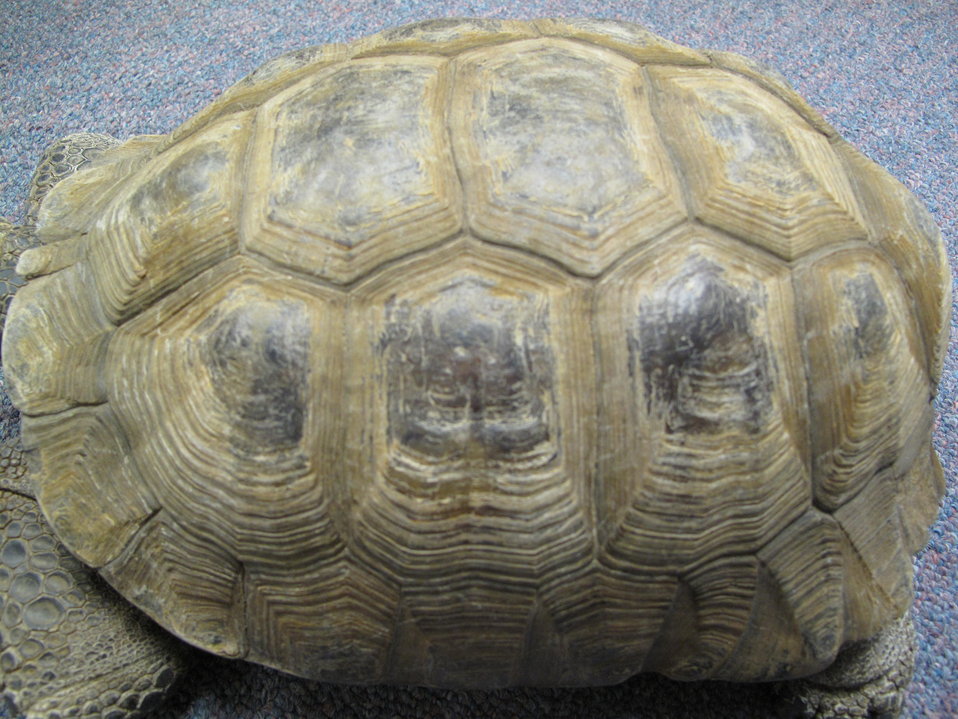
Shell

Desert tortoise shell.